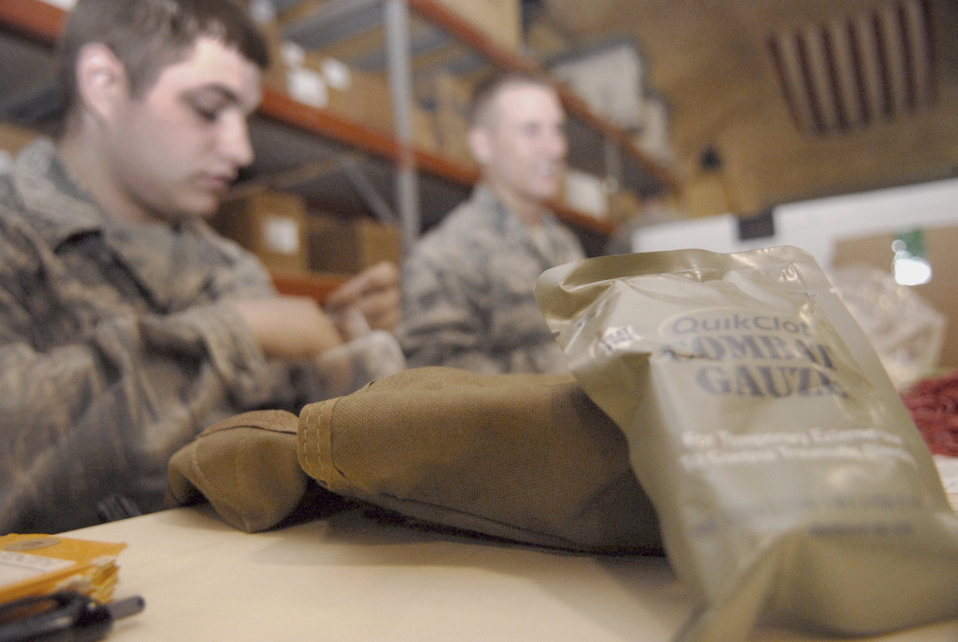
Pitching in

Airmen from across the 379th Air Expeditionary Wing volunteer to assemble individual first aid kits for distribution to personnel downrange April 9 at an air base in Southwest Asia. The Airmen work on the individual first aid kits program in support of operations Iraqi Freedom and Enduring Freedom.